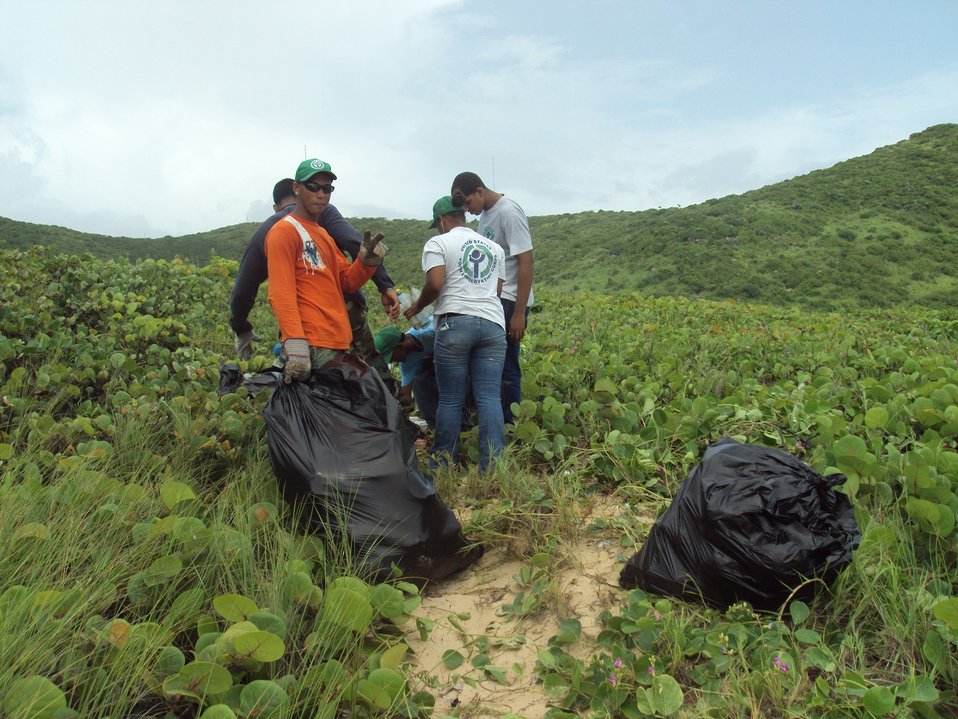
Culebra Natl Wildlife Refuge, Puerto Rico

Picking up litter on the beach